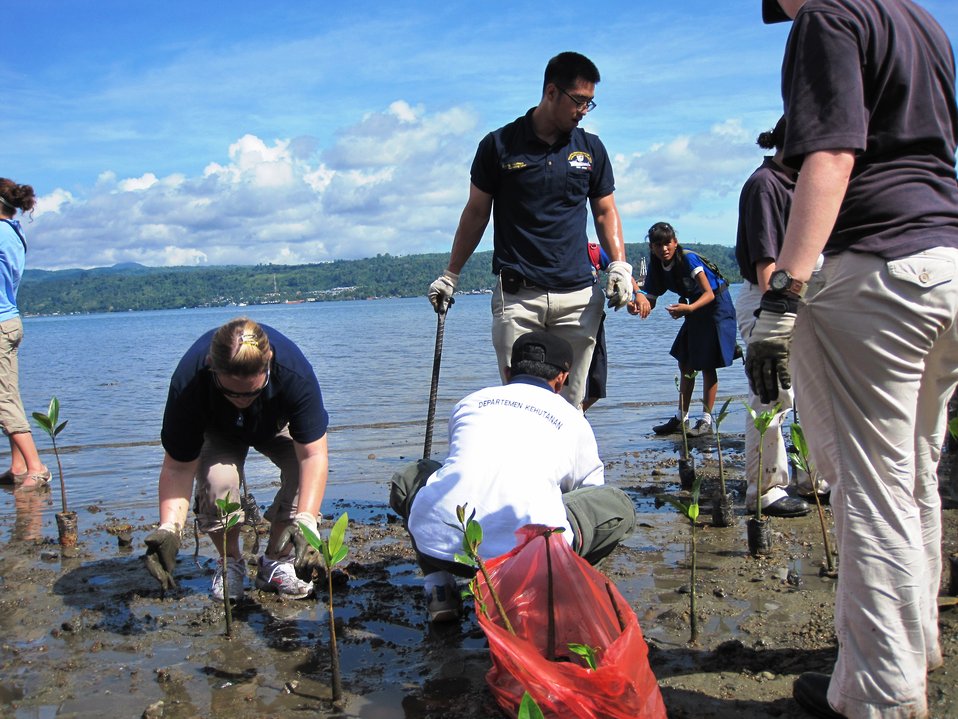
PP 2010 Volunteers Join Indonesians To Replace Mangrove Trees

Pacific Partnership 2010 volunteers join Indonesians to replace hundreds of mangrove trees along the coast of Ambon Island in the Banda Sea, Eastern Indonesia. The USNS MERCY/PP10 is participating with ships from Indonesia, Australia and Singapore in the local SAIL BANDA activities, dedicated to improving the future of small islands and promoting awareness of the importance of preserving and caring for coral reefs and wetlands.